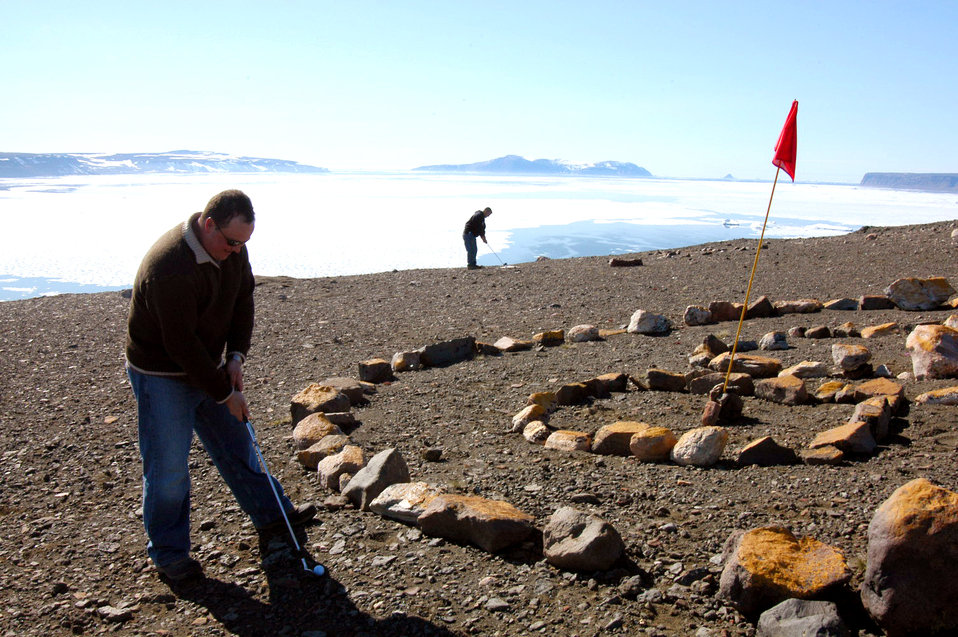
Tee time

THULE AIR BASE, Greenland -- Greg Lambert lines up a shot during the 20th Annual Mount Dundas Open, the northernmost golf tournament in the world, here July 3. More than 35 participants climbed 800 feet of shale rock to reach the nine-hole par-3 course, which overlooks the air base, the polar ice cap and iceberg-filled North Star Bay. The final 75 feet up Mount Dundas featured a rope climb up shear rock face, making it necessary to move golf clubs and other equipment by helicopter. Mr. Lambert is a contractor with the 821st Security Forces Squadron.